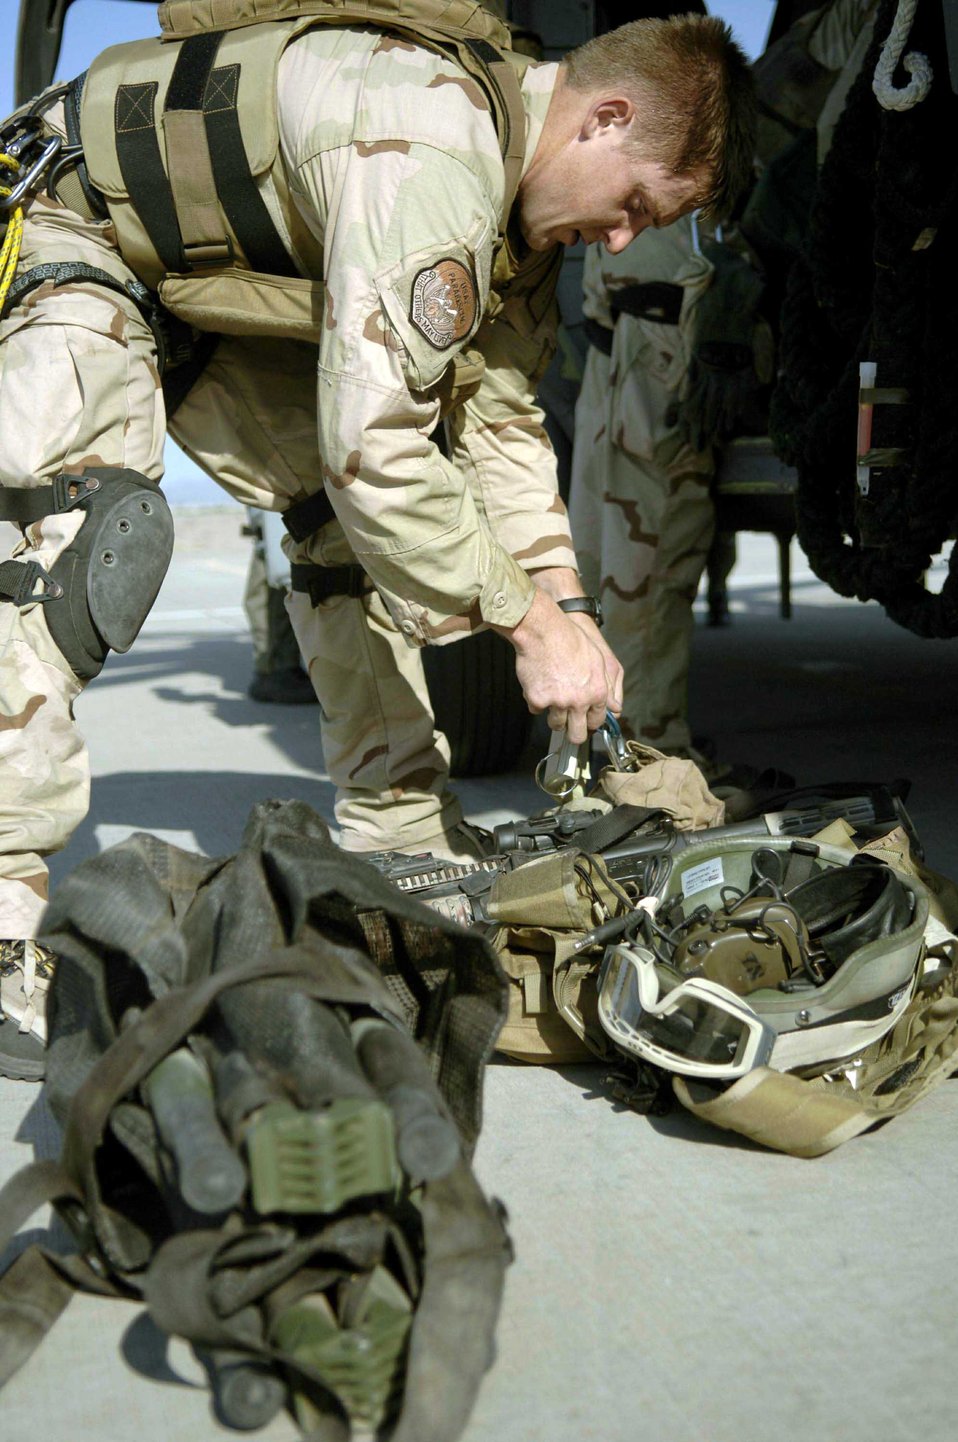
Angel Thunder

Senior Airman Troy Patrick checks his gear as he prepares to fly to Gila Bend, Ariz., for Exercise Angel Thunder on July 25. The five-day exercise, held at Davis-Monthan Air Force Base, Ariz., and other areas is designed to provide realistic combat search and rescue training for active-duty, Reserve and Guard Airmen in combat rescue forces. Airman Patrick is a pararescueman with the 48th Rescue Squadron.